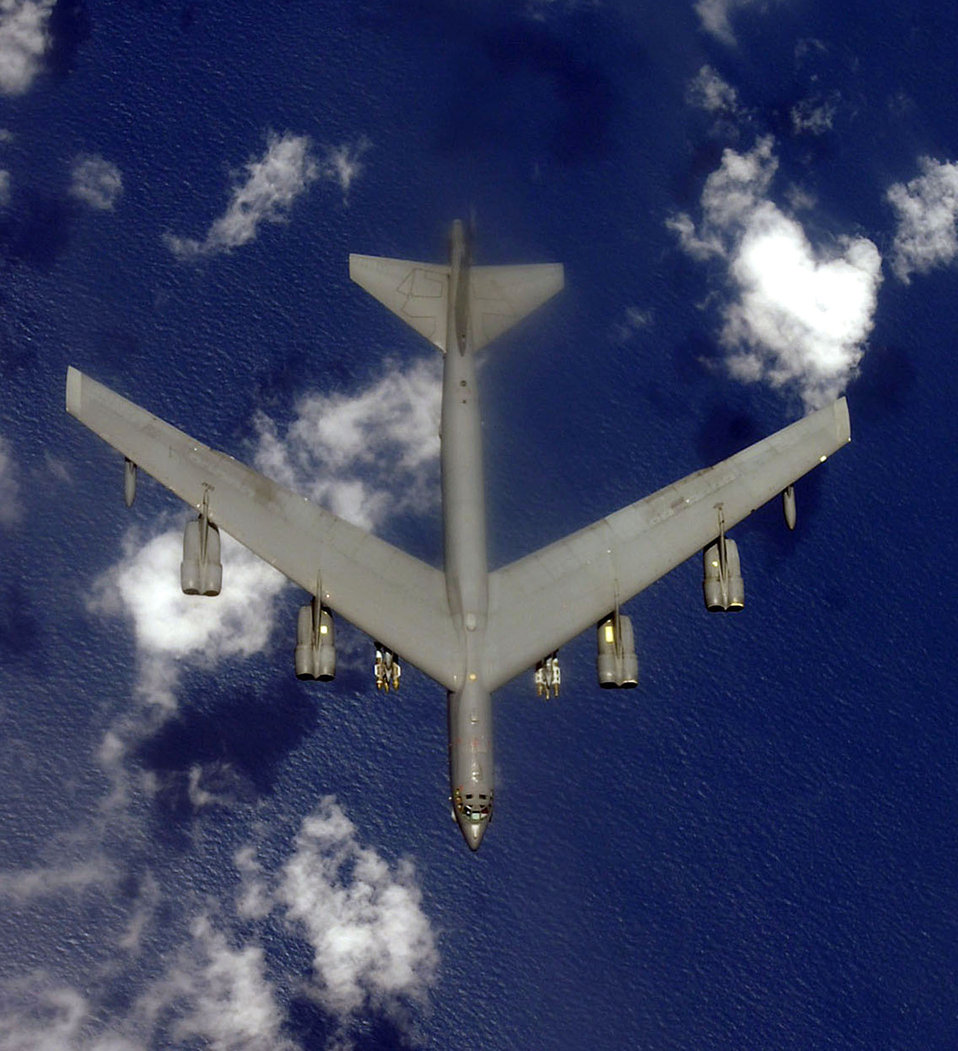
B-52 presence welcomed by U.S., coalition forces

A B-52 Stratofortress is on its way to a combat mission over Afghanistan. The B-52s provide close-air support for U.S. and coalition forces in support of Operation Enduring Freedom.